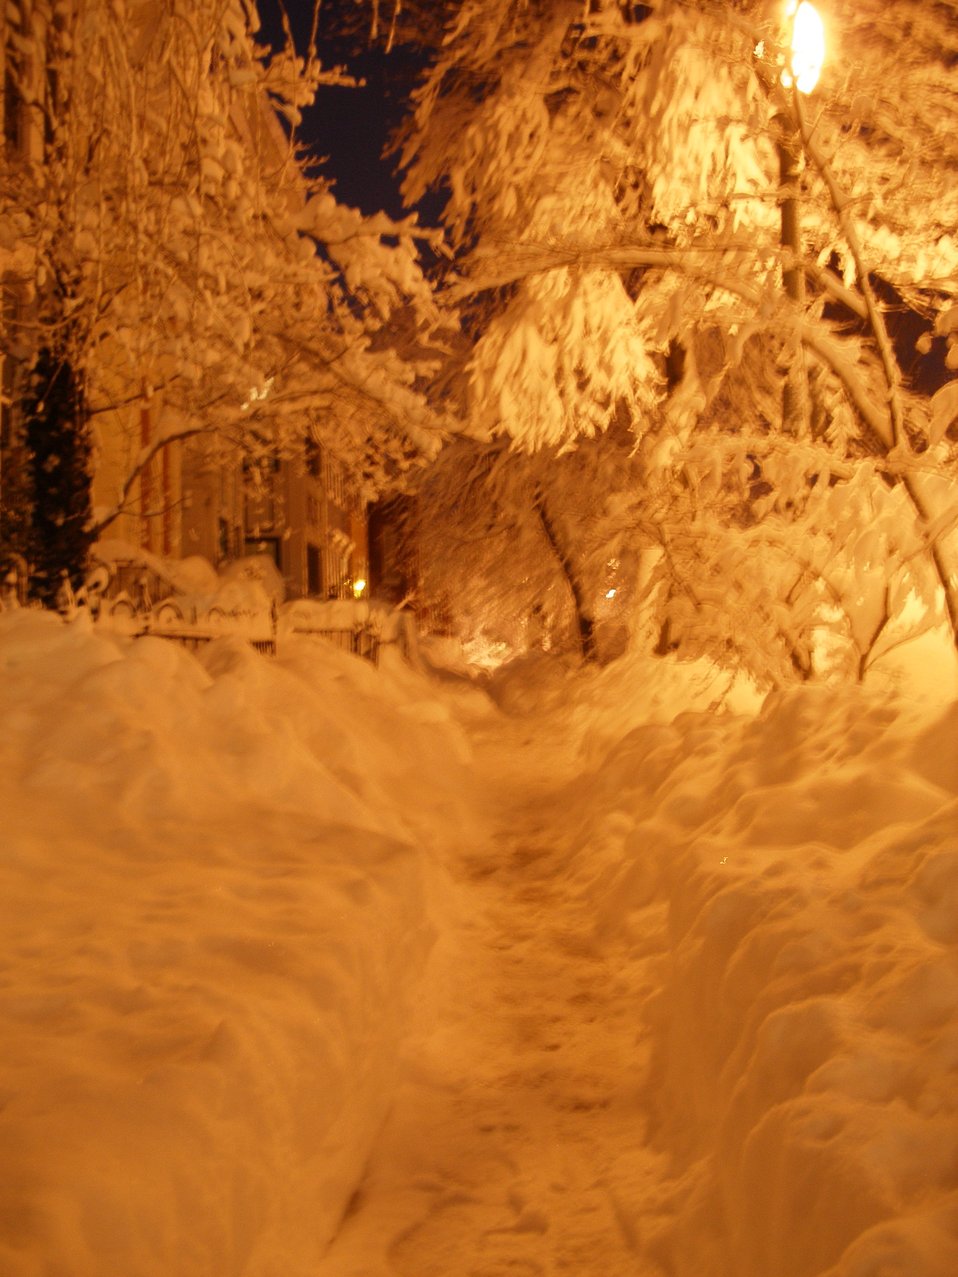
Night lights on snow during second major snowstorm of 2009/2010 season.